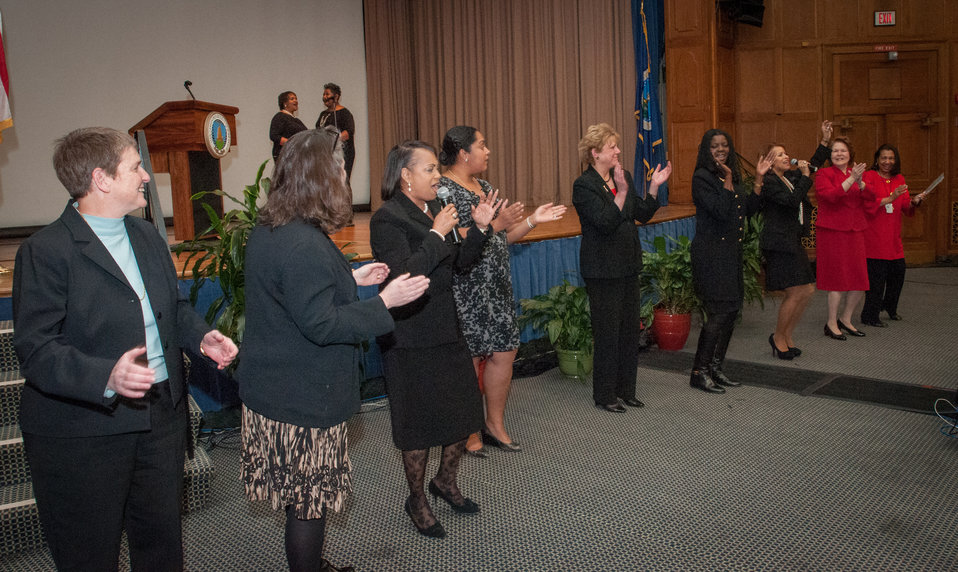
The speakers get up and join Renee Allen, Pamela Carter, Rita Meade and Reedema Rock as they sing “I’m every Woman” to close-out the 2013 Women’s History Month Observance event, “Women Inspiring Innovation Through Imagination: Celebrating Women in Science, Technology, Engineering, and Mathematics, onThursday, March 21, 2013, in Washington, D.C.